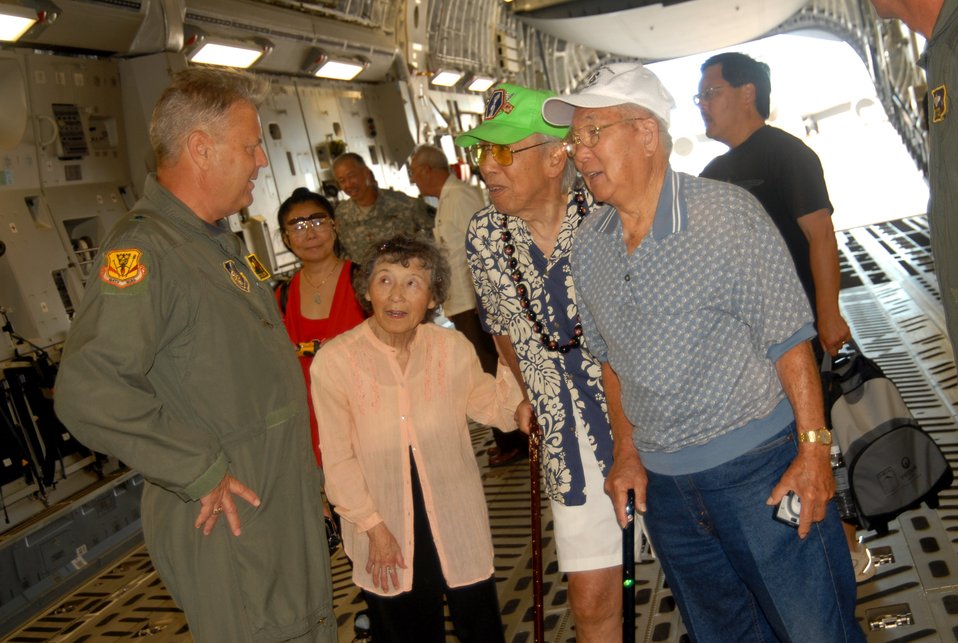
WWII veterans tour Hickam

Brig. Gen. Peter Pawling talks with veterans visiting a C-17 Globemaster III June 25 at Hickam Air Force Base, Hawaii. The veterans, who served in the 100th Infantry Battalion during World War II, and family members were taking a tour of the base. General Pawling is the commander of the Hawaii Air National Guard's 154th Wing.